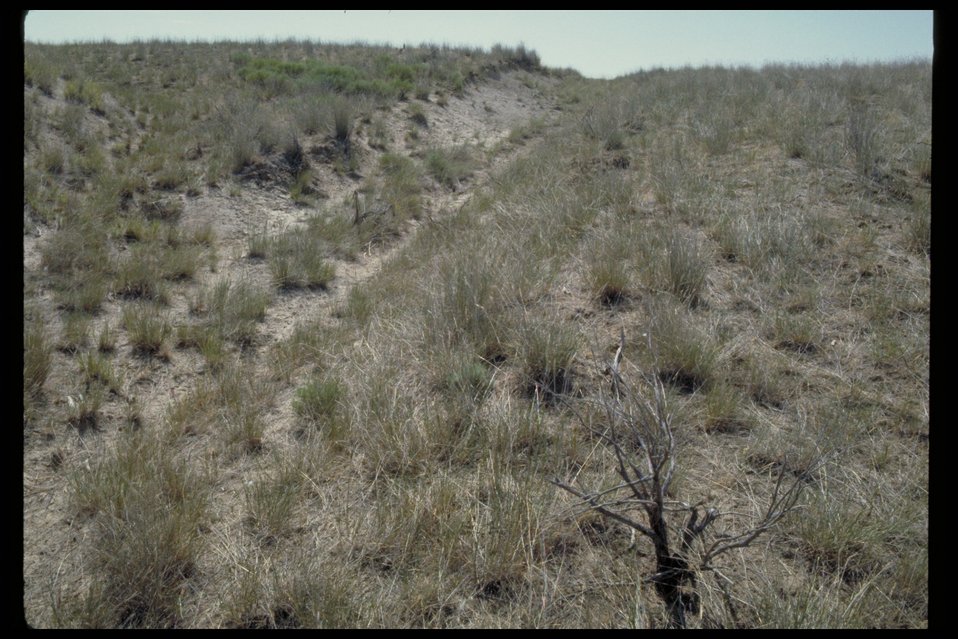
Oregon Trail east of Cassia Gulch Lower Snake River District